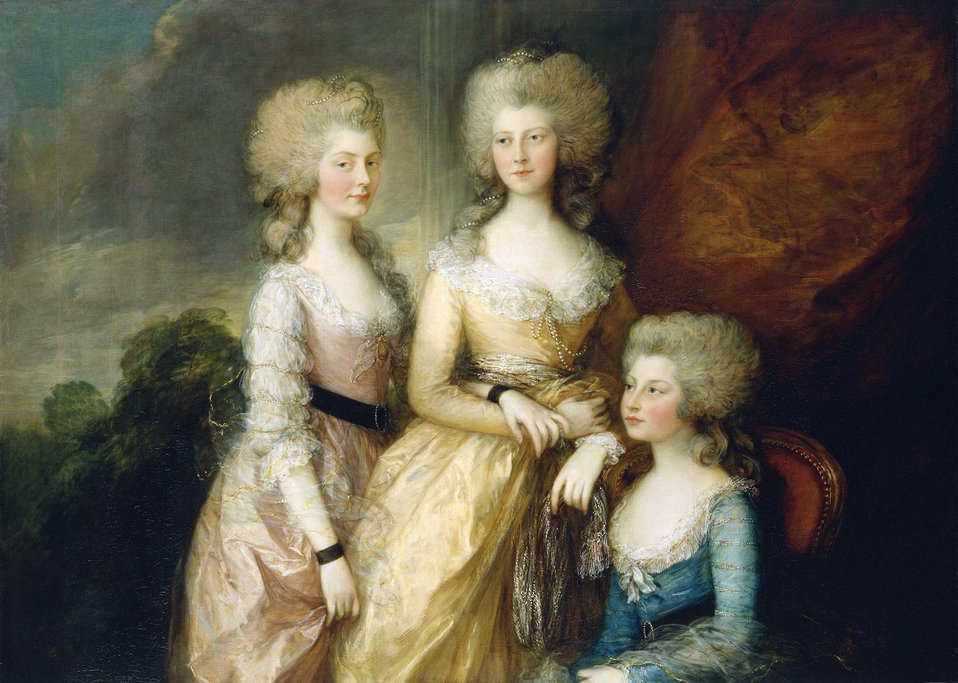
The Three Eldest Princesses, Charlotte, Princess Royal, Augusta and Elizabeth - Gainsborough 1784